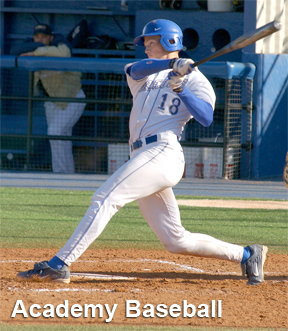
Academy baseball

For up-to-date scores on all U.S. Air Force Academy sports, visit their Web site at www.goairforcefalcons.com.